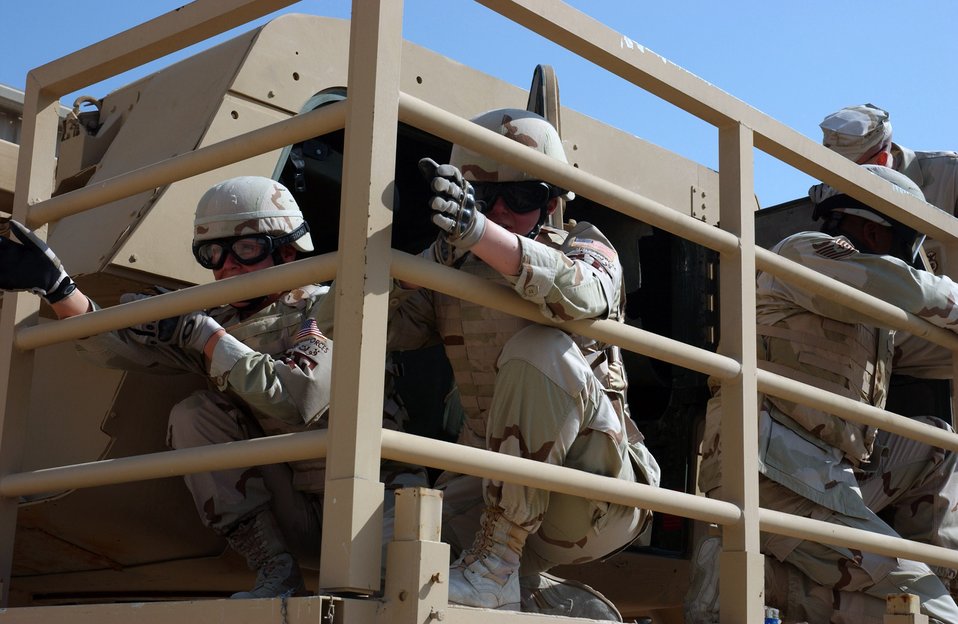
Airmen receive Humvee egress training to improve survival

Airmen from the 379th Expeditionary Security Forces safely egress an inverted